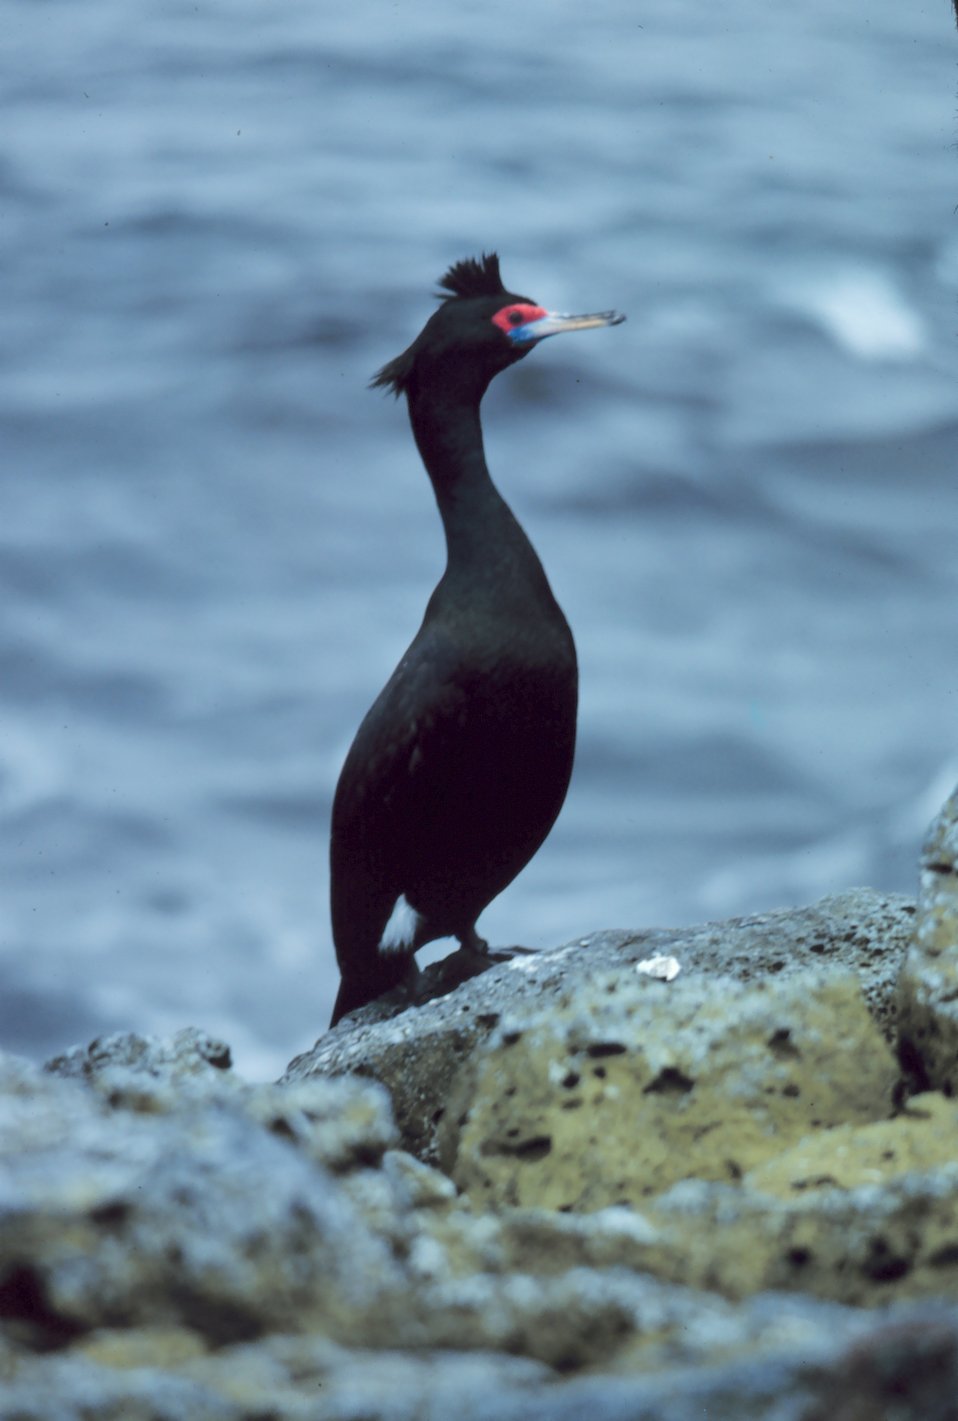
Side view of a red-faced cormorant.